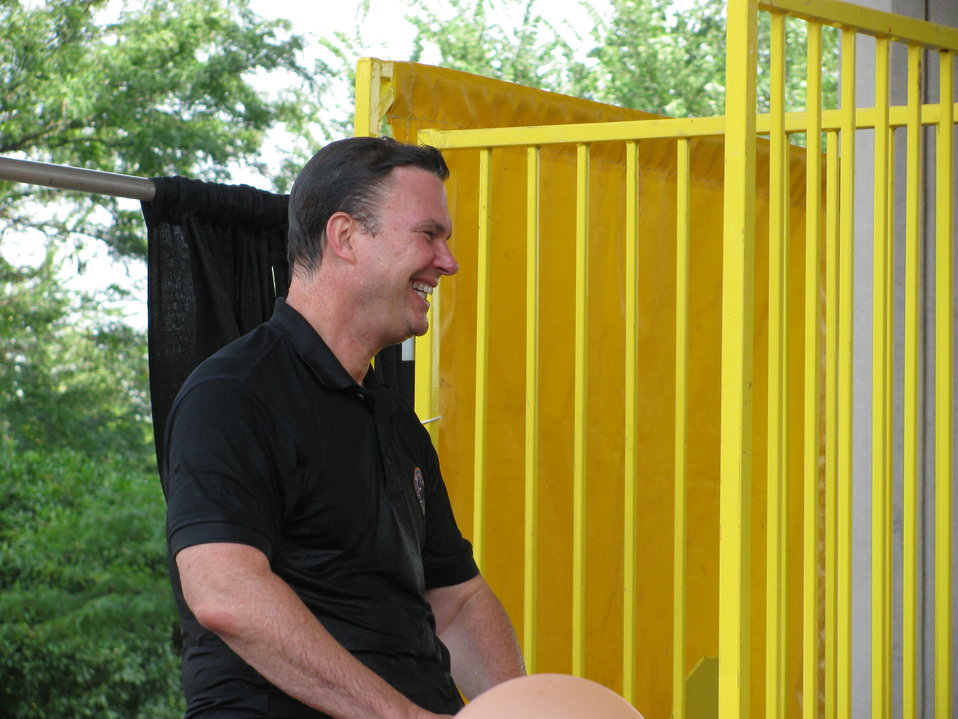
White House Office of Personnel Management John Berry in the dunk tank